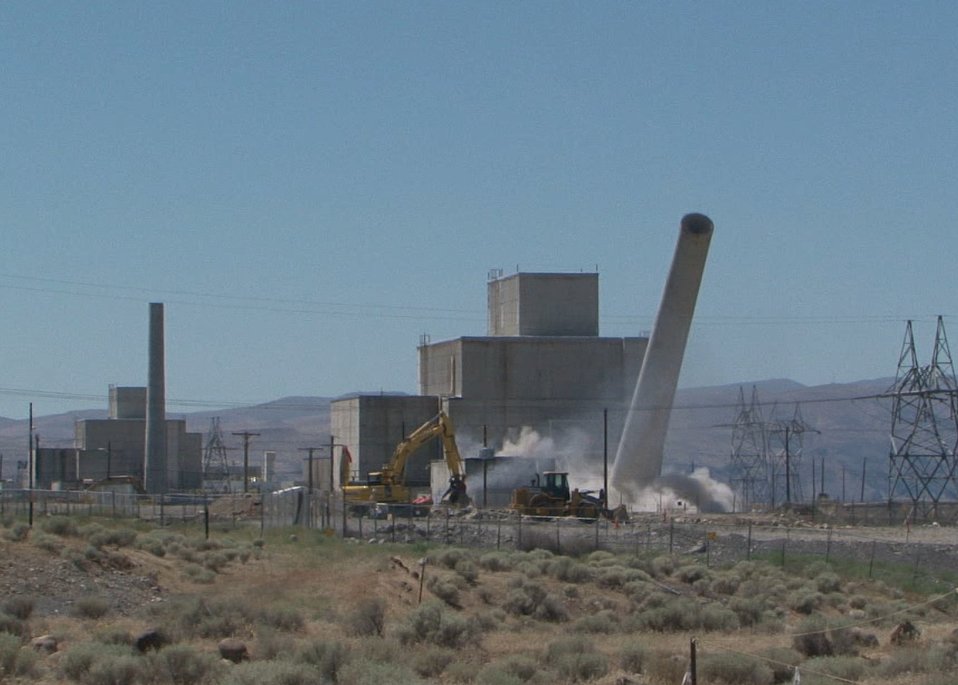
116KE during demolition

Workers safely demolished a 175-foot-high exhaust stack at the Hanford Site in Washington state, a project supported by $420,000 in Recovery Act funds.